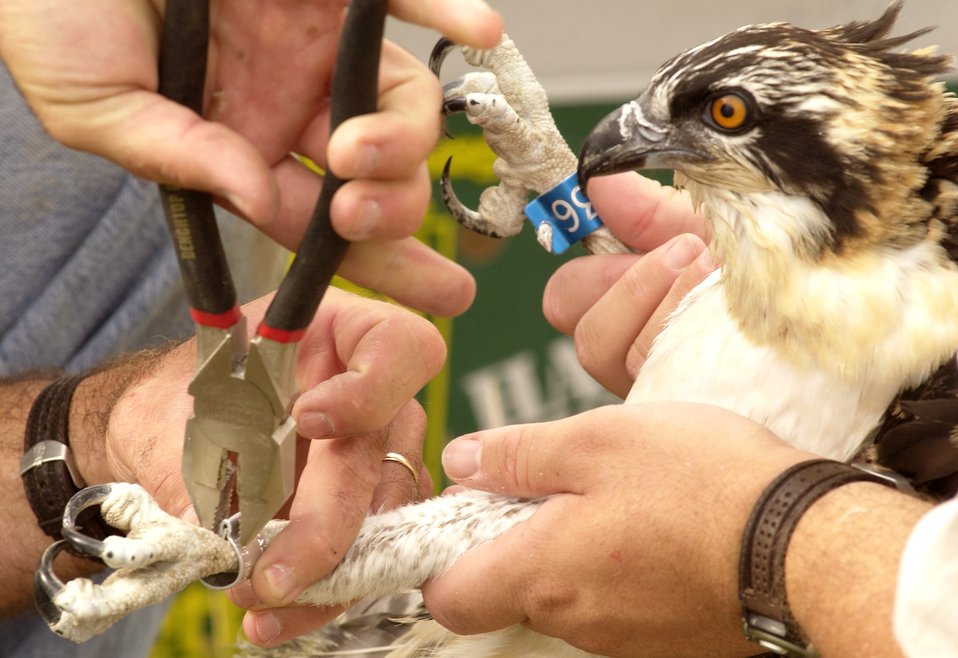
Ospreys, Eagles share airspace at Langley

CUMBERLAND, Ohio -- Staff members at a conservation facility here place identification bands around the claws of a recently relocated osprey from Langley Air Force Base, Va. The relocated osprey are given a blue band for the state of Ohio and a silver federal band so they can be tracked and observed. The 10,000-acre facility is the largest such facility in North America and is home to 200 animals and 24 different species. Eleven osprey were relocated from Langley to a conservation facility in Cumberland, Ohio, to control the population and minimize the risk of potential bird strikes.